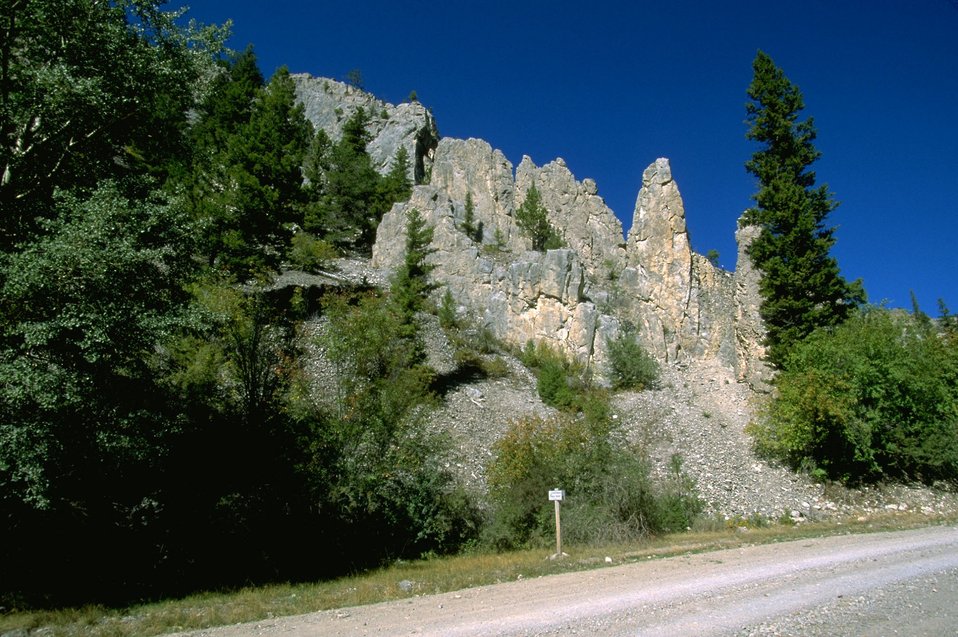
Rattler Gulch-Limestone Cliffs ACEC